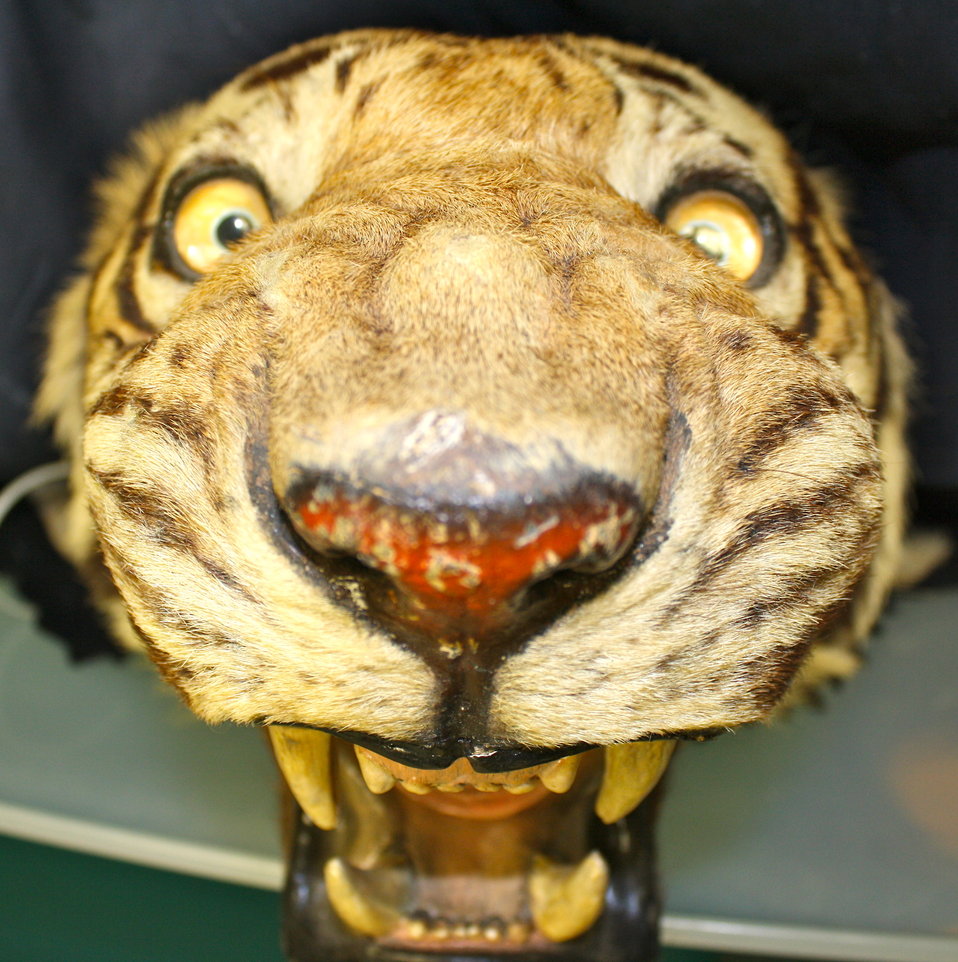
Stuffed tiger head from an educational display at Chelsea, Mass. Office of Law Enforcement.